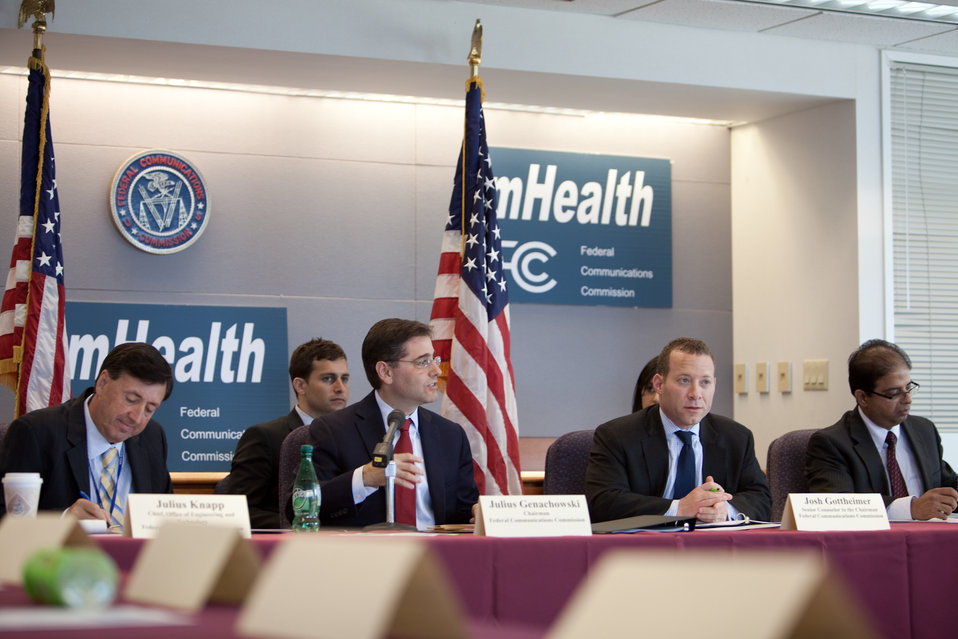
FCC Chairman Genachowski speaking about mHealth.

June 6, 2012 - FCC Headquaters | Washington, DC